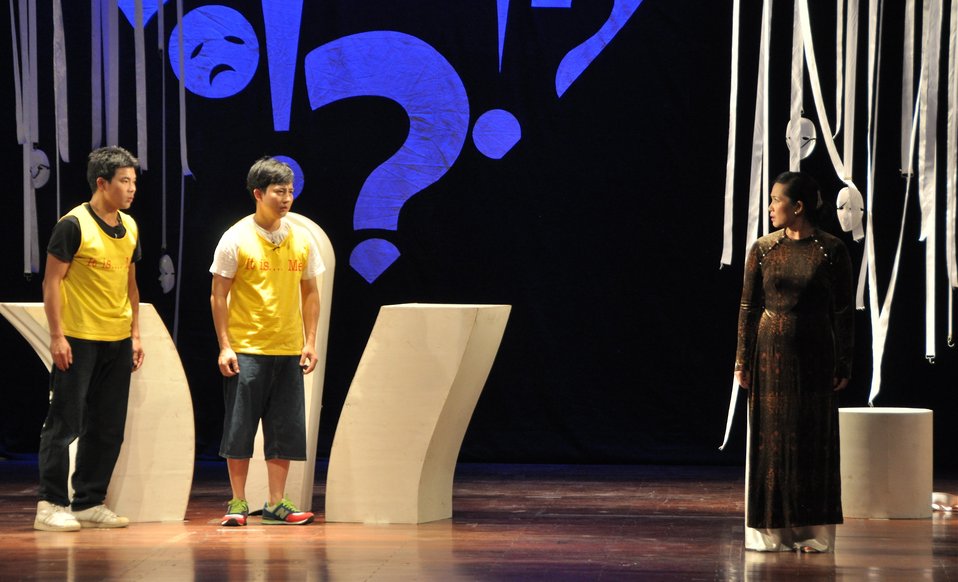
PEPFAR Musical Questions and Exclamations

Hanoi, May 17, 2013